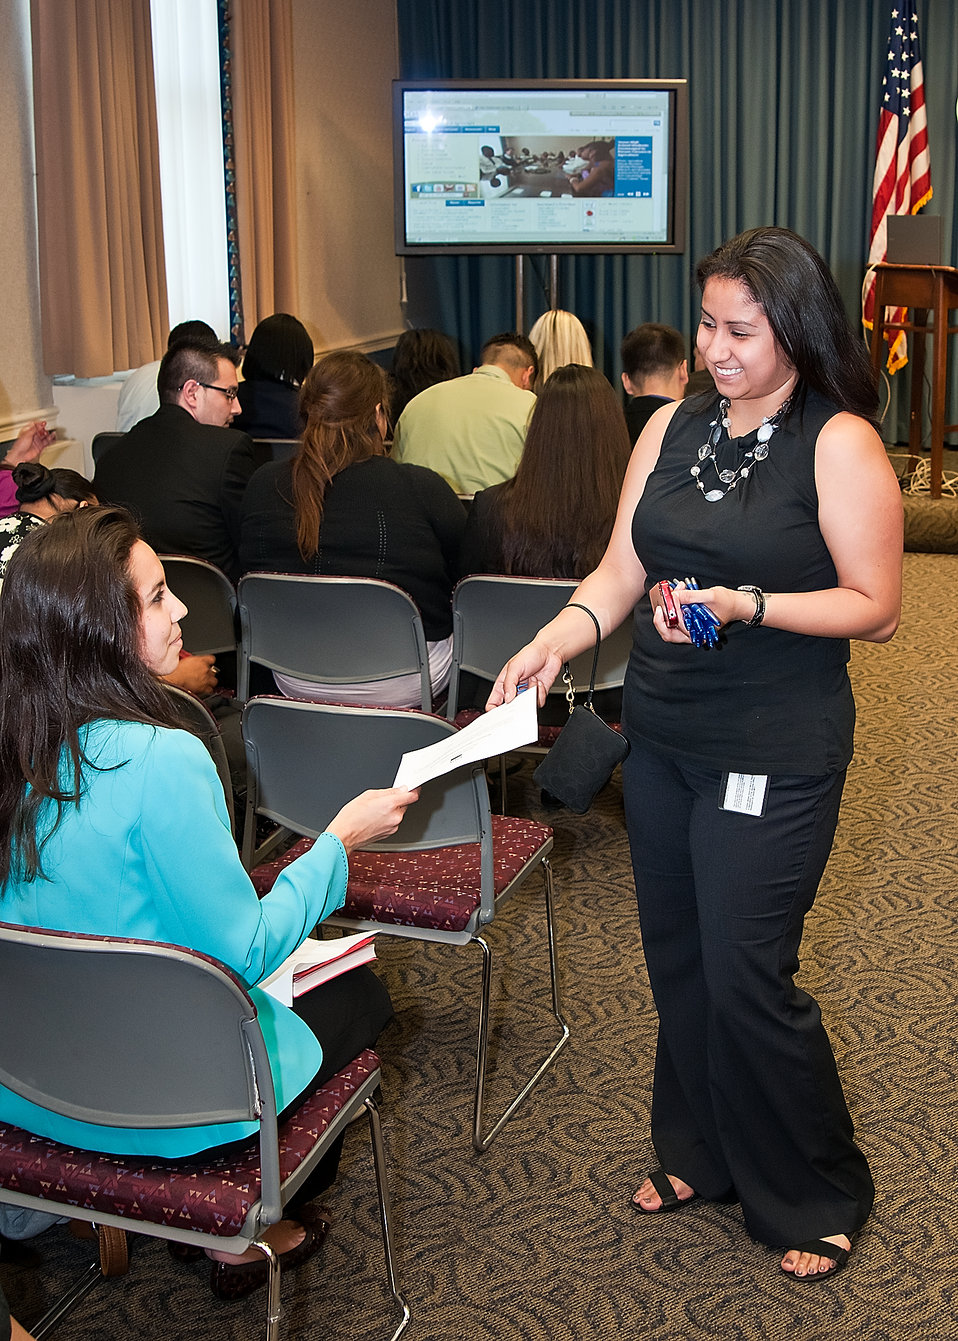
Graduate of the University of Massachusetts Amherst Denise Pollock (left) receives information about the United States Department of Agriculture (USDA), Hispanic Association of Colleges and Universities (HACU) from Agriculture Departmental Management, Hispanic Serving Institutions Jessica Castro (right) during the USDA/HACU/Tribal College Summer Intern Orientation Program at USDA in Washington, DC, Monday, Jun. 6, 2011. The HACU/Tribal College National Internship Program represents more than 400 colleges and universities committed to higher education in the U.S., Puerto Rico, Latin America, Spain and Portugal and places student interns each year with federal agencies in Washington, DC or in field offices around the country.